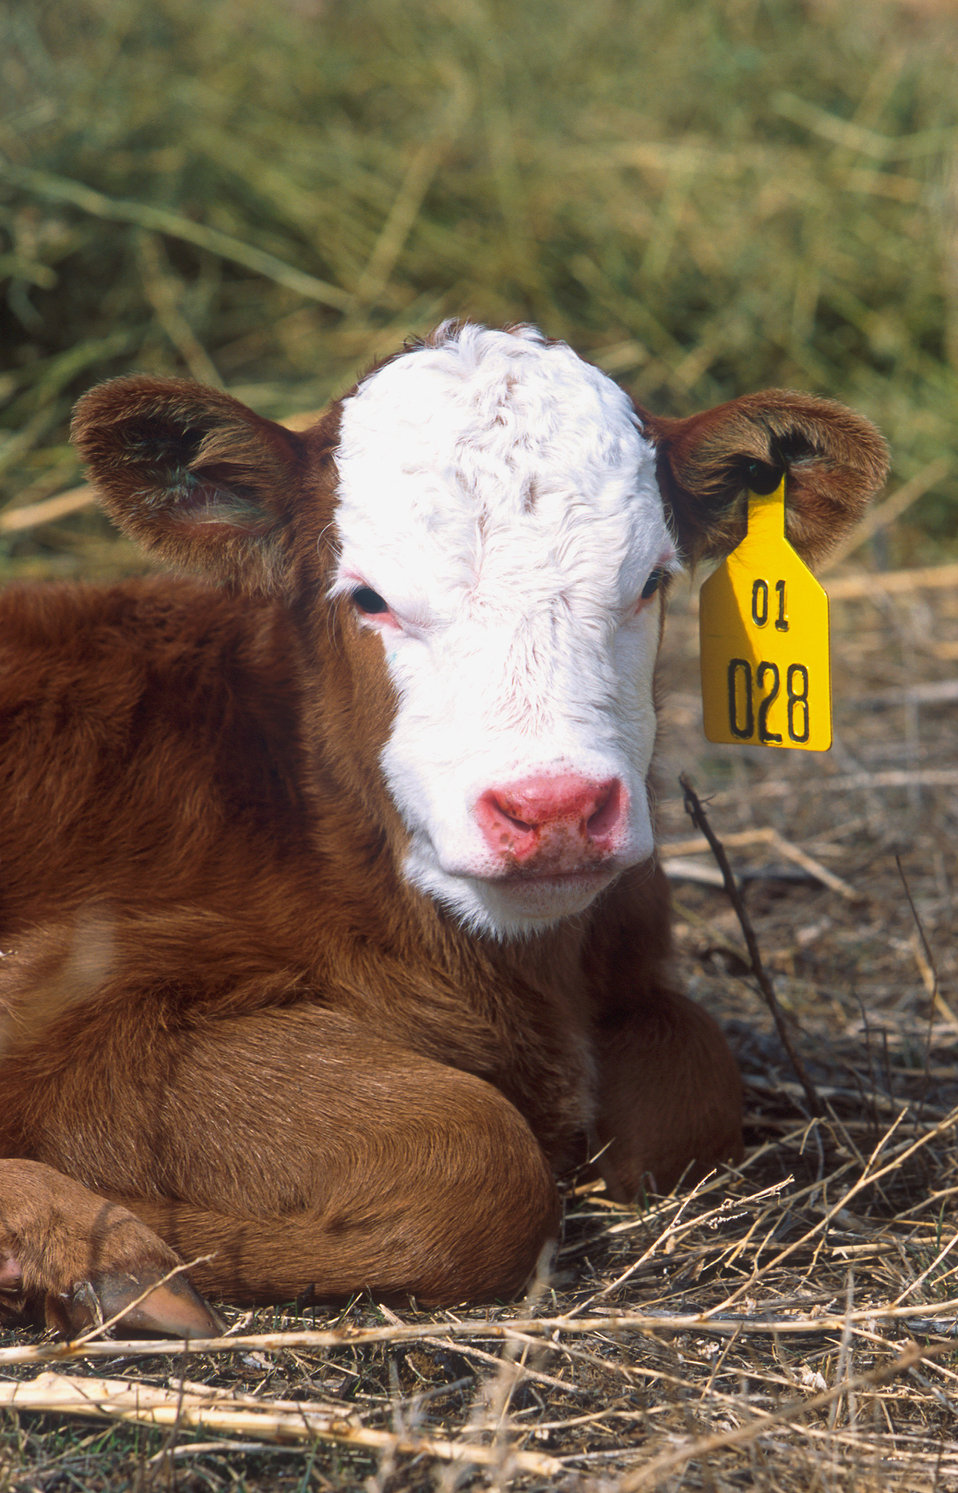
Producing healthy calves like this one is the goal of researchers at U.S. Department of Agriculture (USDA) Agriculture Research Service (ARS) Fort Keogh Livestock and Range Research Laboratory in Montana. They're currently studying hormonal and genetic causes of dystocia, or calving difficulty.